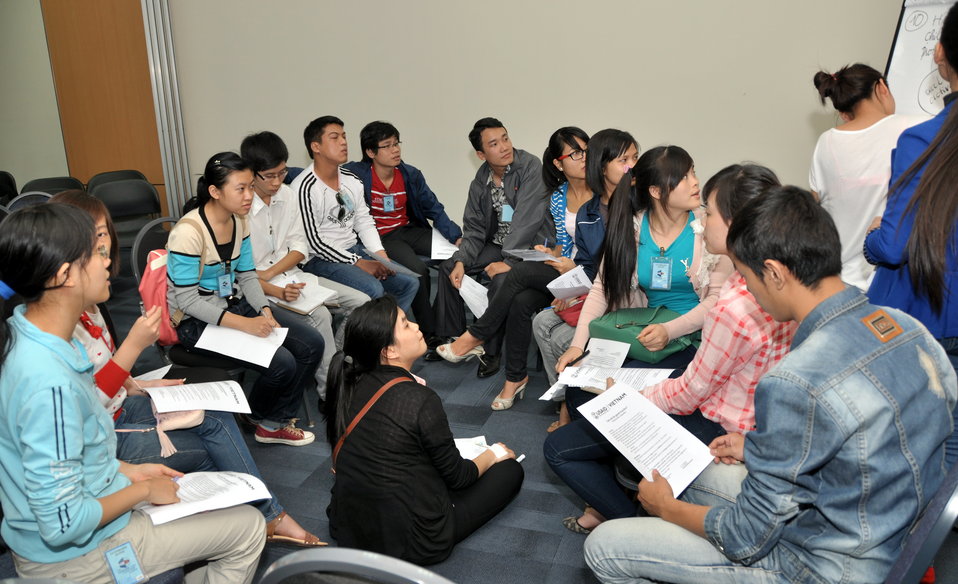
Students join the ‘USAID and Higher Education in Vietnam’ talk

Photo: @USAIDVietnam, November 19, 2012